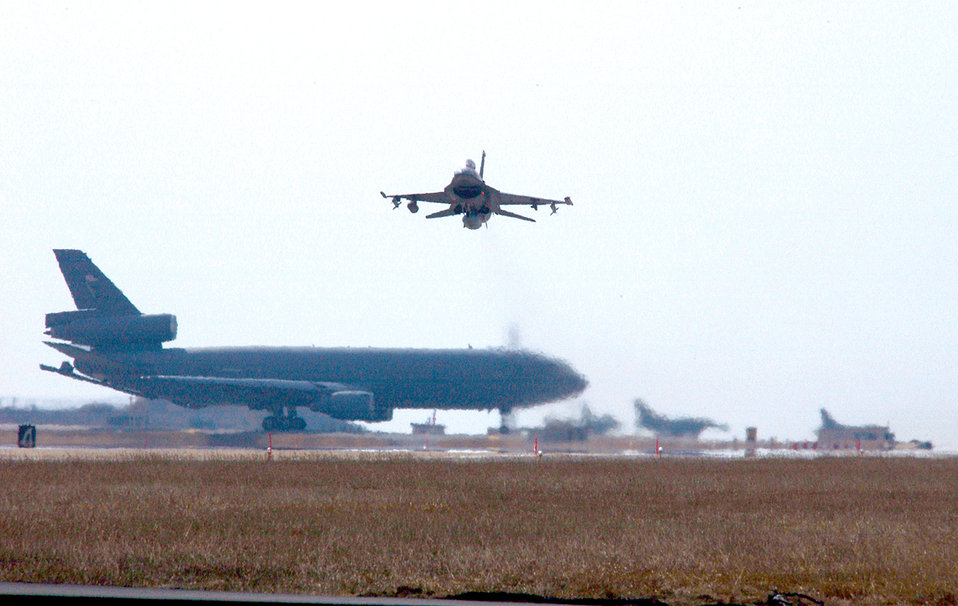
Operation Commando Sling

An F-16 Fighting Falcon from the 80th Fighter Squadron lifts off over waiting F-16s and a KC-10 Extender at Kunsan Air Base, South Korea, Thursday, March 2 2006. The 80th FS and 80th Aircraft Maintenance Unit deployed to Singapore Operation Commando Sling, a month-long joint training exercise between the U.S. and Singapore.